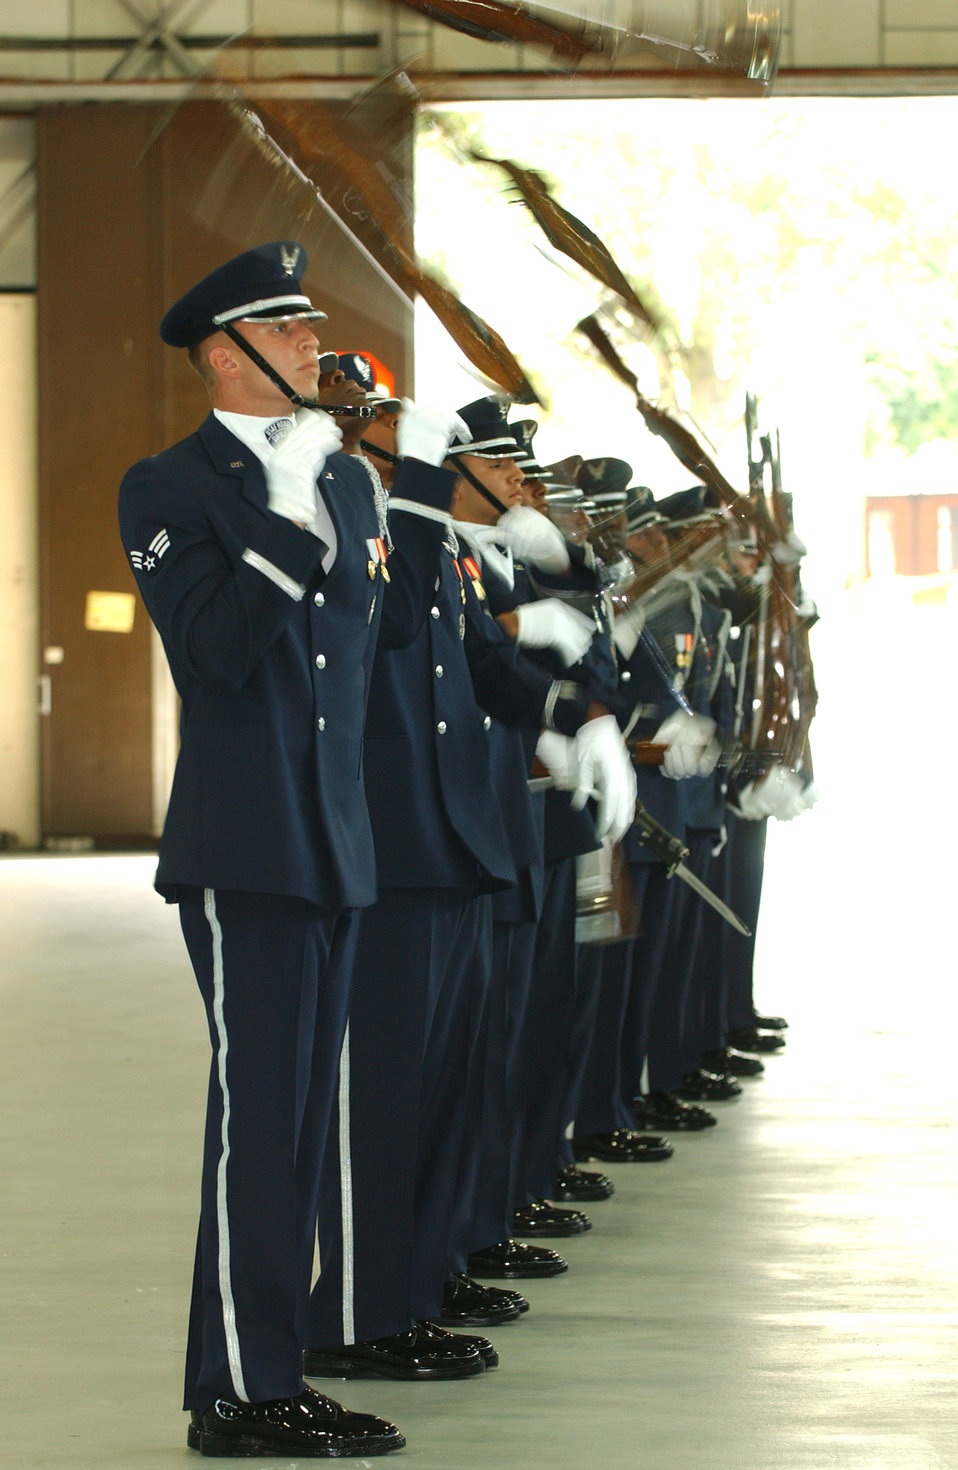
USAF Honor Guard Drill Team

ROYAL AIR FORCE MILDENHALL, England - The U.S. Air Force Honor Guard Drill Team concludes their show here June 14, by forming a straight line facing the crowd. A standard 16-person performance lasts 15 minutes and showcases a professionally choreographed routine full of show-stopping weapon maneuvers, precise tosses, and complex weapon exchanges. The drill team is from the 11th Operations Group at Bolling Air Force Base, D.C.